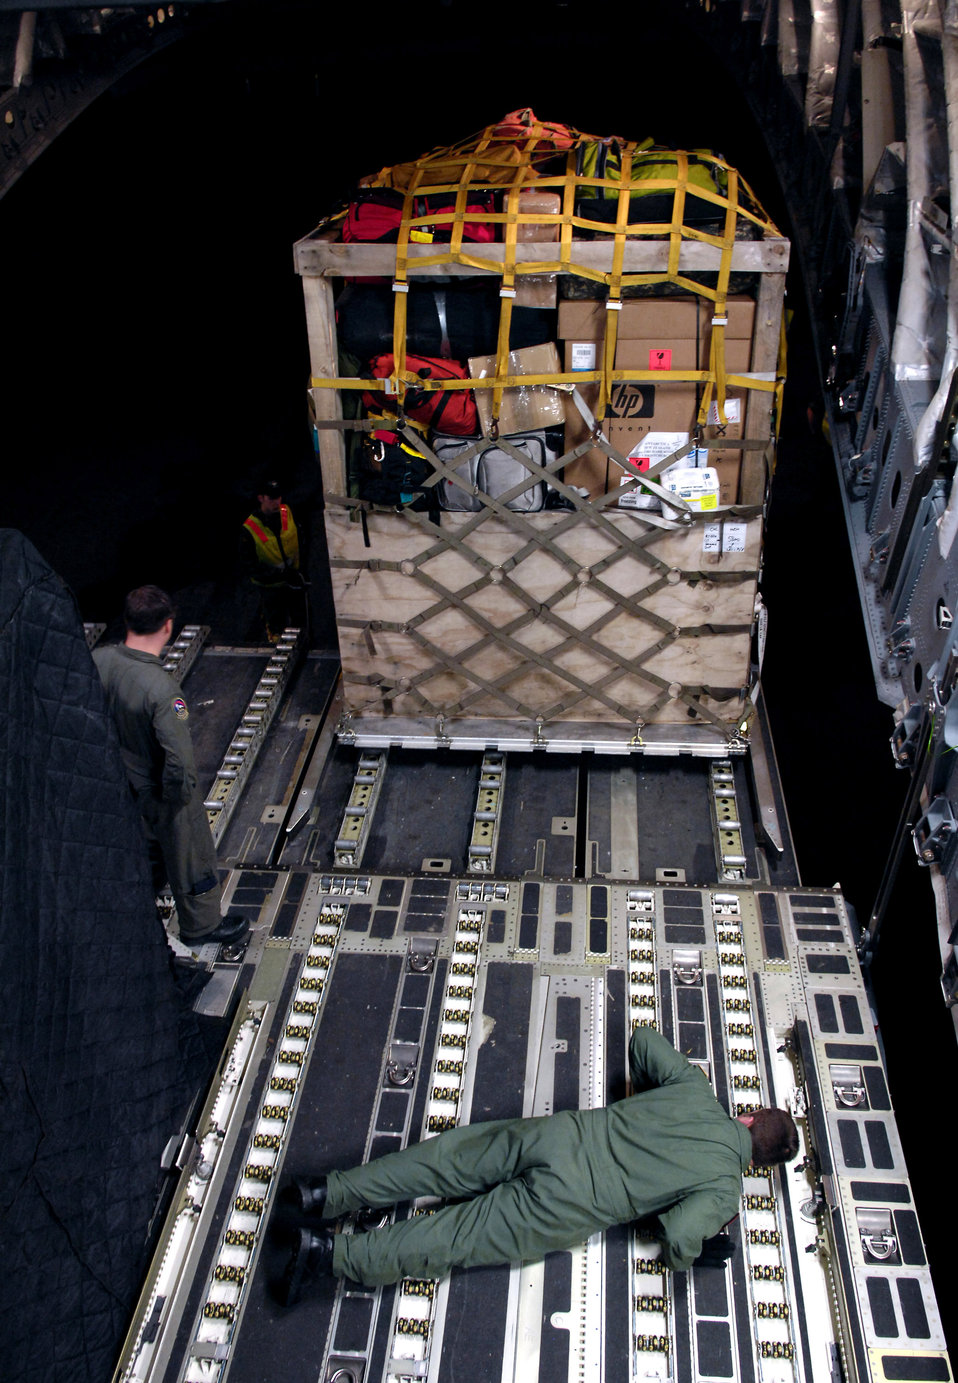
Winter flights to Antarctica wrap up

Tech. Sgt. Kris Albertson checks the clearance of a cargo pallet being loaded onto a C-17 Globemaster III during Operation Deep Freeze Aug. 25 at Christchurch, New Zealand. A C-17 and 31 Airmen from McChord Air Force Base, Wash., conducted the annual winter fly-in augmentation of scientists, support staff, food and equipment for the U.S. Antarctic Program at McMurdo Station, Antarctica.